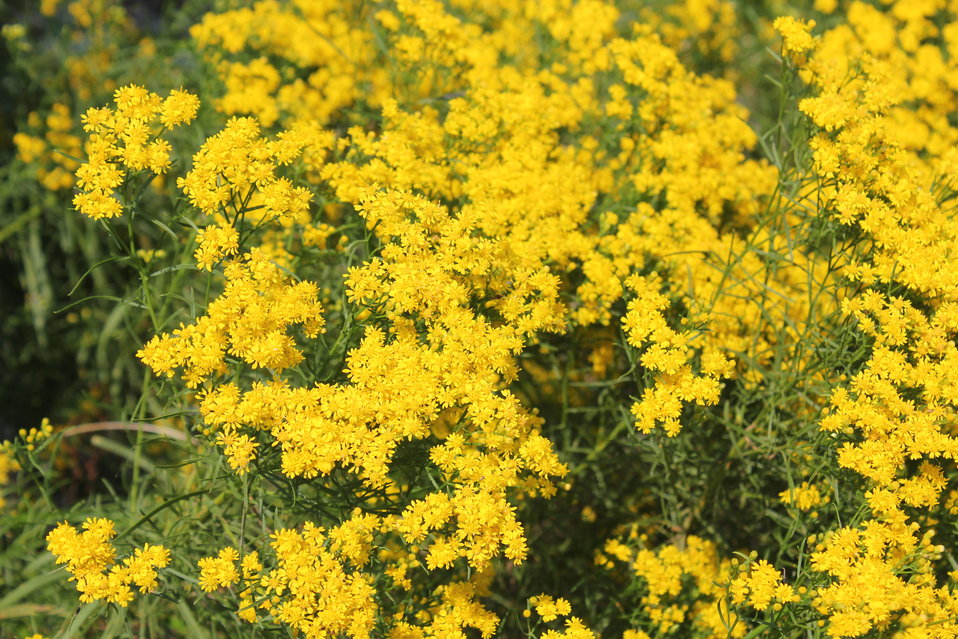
Goldenrod

Photographed at Wertheim National Wildlife Refuge.